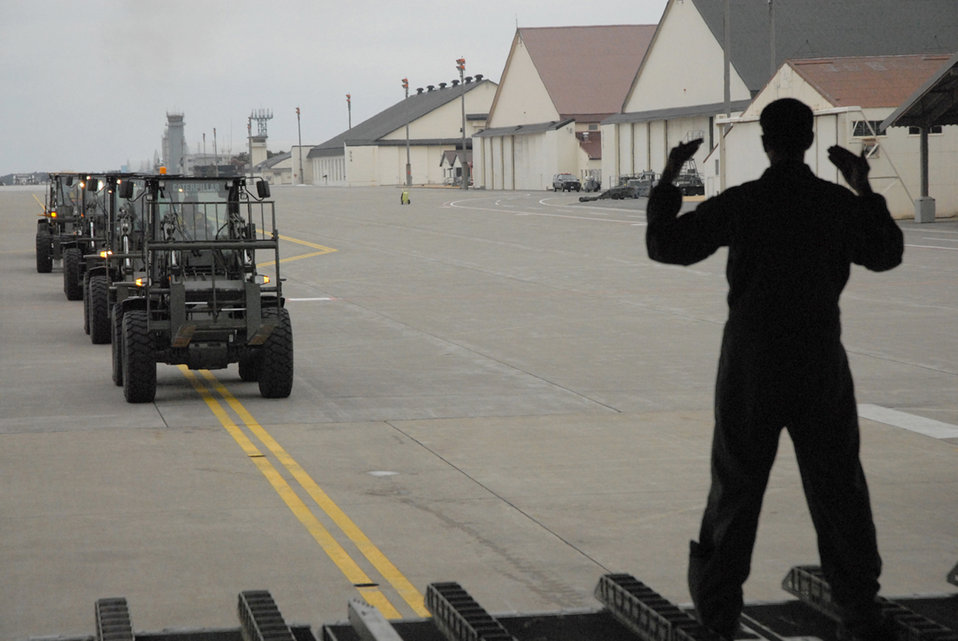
517th Airlift Squardron supports relief efforts in Japan

Joint Base Elmendorf-Richardson, Alaska -- Air Force Master Sgt. Stephen Mallory, loadmaster, stationed at the 517th Airlift Squadron, Joint Base Elmendorf Richardson Alaska, marshals 10KAT forklifts to offload 47,000 lbs of water for humanitarian relief efforts off a C-17 at Misawa Air Base, Japan.